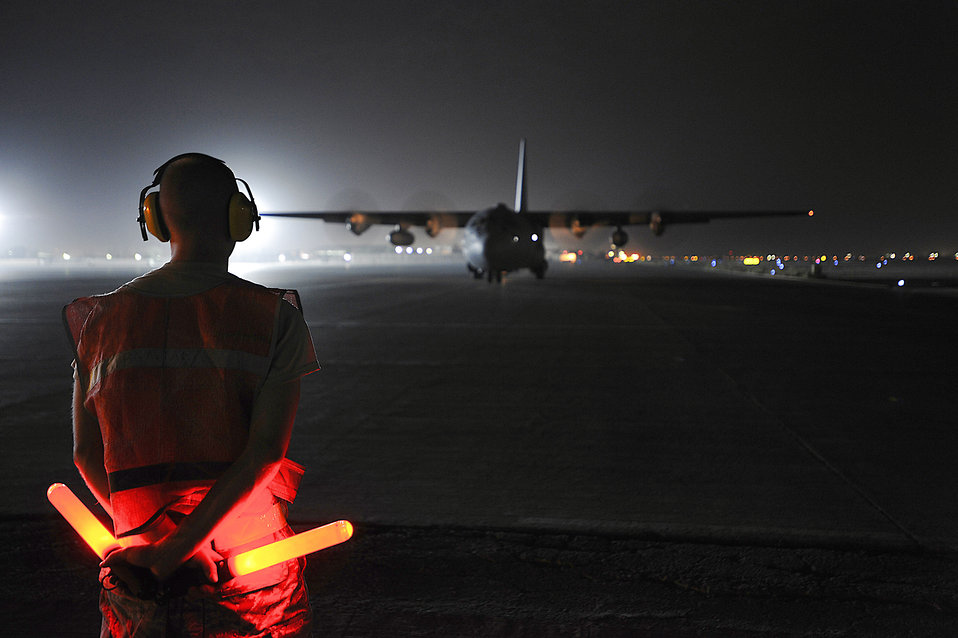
I'm waiting for your signal

Senior Airman Luke Gills directs an Iraqi air force C-130 Hercules Oct. 11 at Joint Base Balad, Iraq. The aircraft, assigned to 23rd Squadron, was on a cargo resupply mission with the U.S. Air Force 370th Air Expeditionary Advisory Squadron.